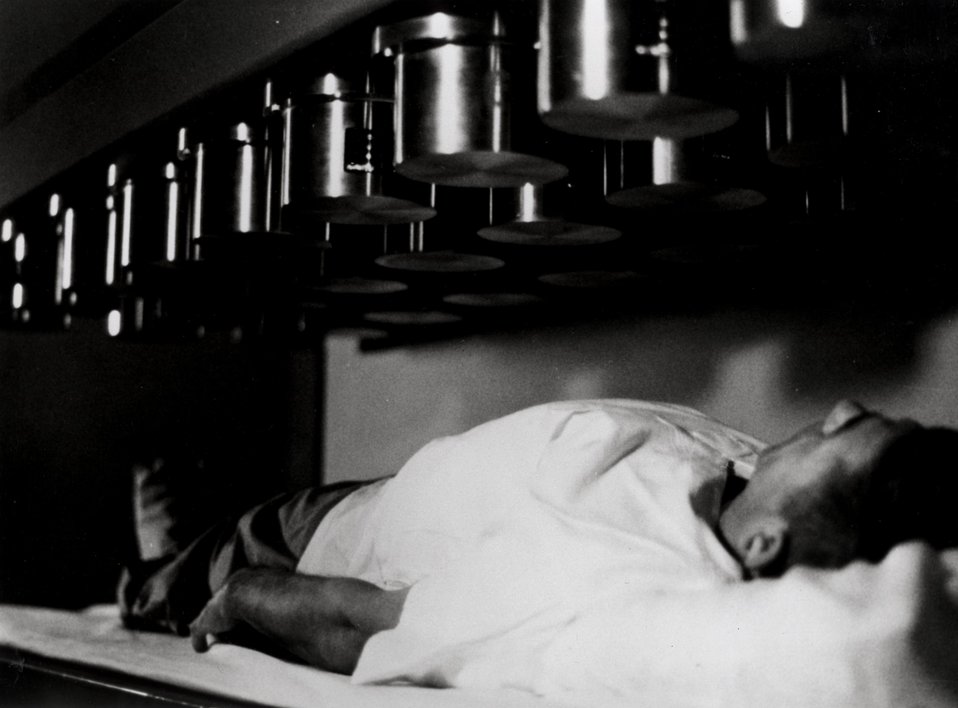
Fifty-four sodium iodide crystals make up the two detector grids. The whole body counter uses in vivo neutron activation analysis by means of gamma measurements.
c.1971